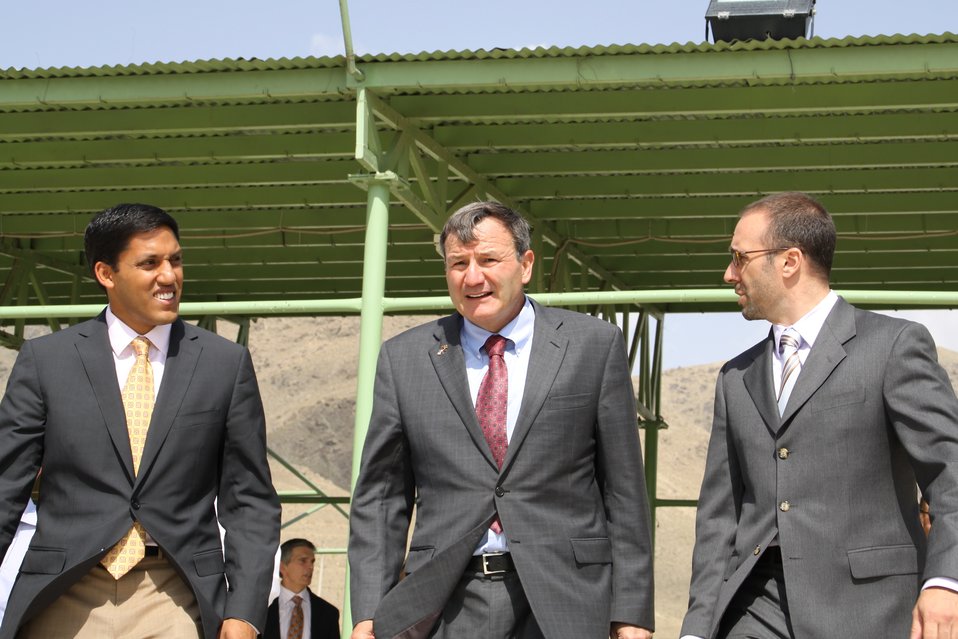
Badam Bagh Farm